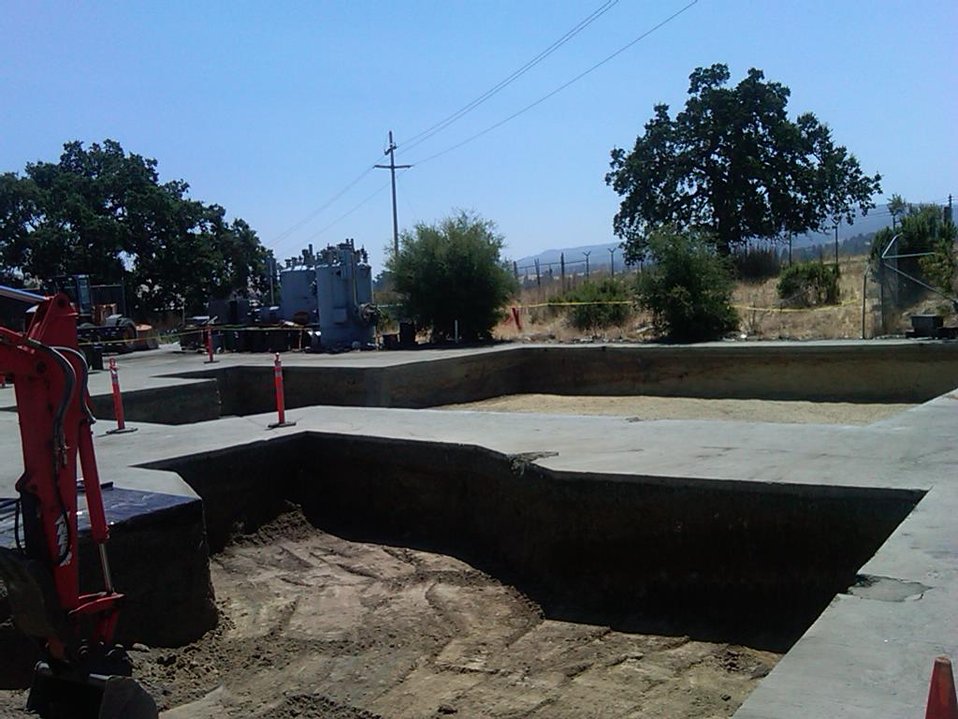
Recovery Act Supports Soil and Debris Cleanup, Groundwater Treatment at SLAC

Recovery Act workers are on track to remove more than 30,000 cubic yards of contaminated soil and debris at the SLAC National Accelerator Laboratory by September 2011.
The Recovery Act invested $14.3 million in legacy cleanup activities at SLAC. In addition to removing contaminated soil and debris that is shipped to local disposal facilities, Recovery Act workers installed three new groundwater treatment systems.